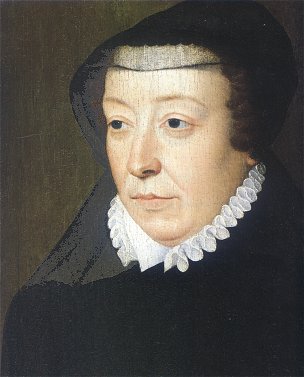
Catherine de Medicis